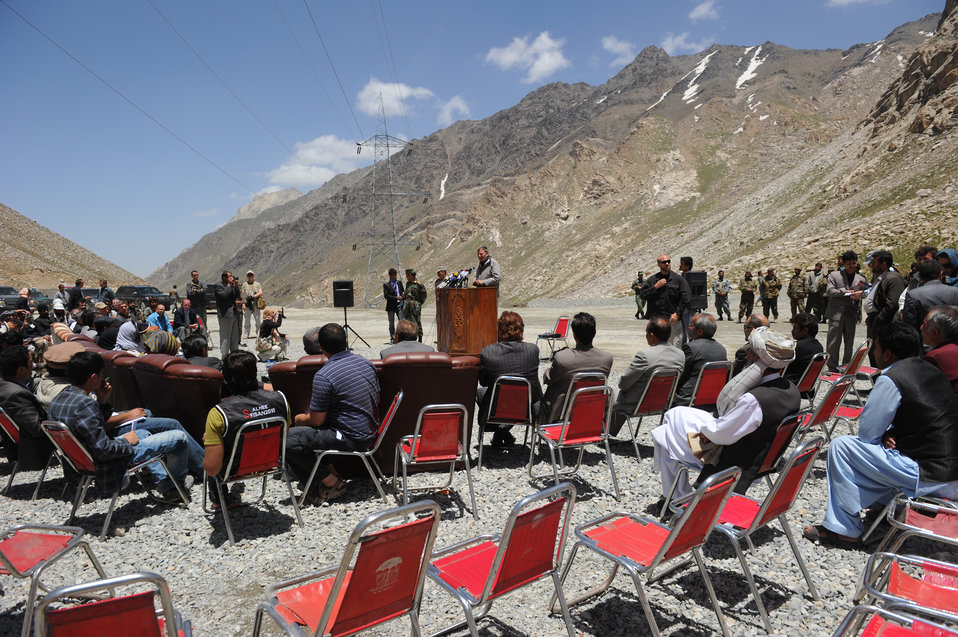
U.S. Ambassador Karl W. Eikenberry attends a ceremony to mark the beginning of renovations at the Salang Tunnel on the border of Parwan and Baghlan Provinces, Afghanistan, on Wednesday, June 15, 2011. (S.K.Vemmer/Department of State)